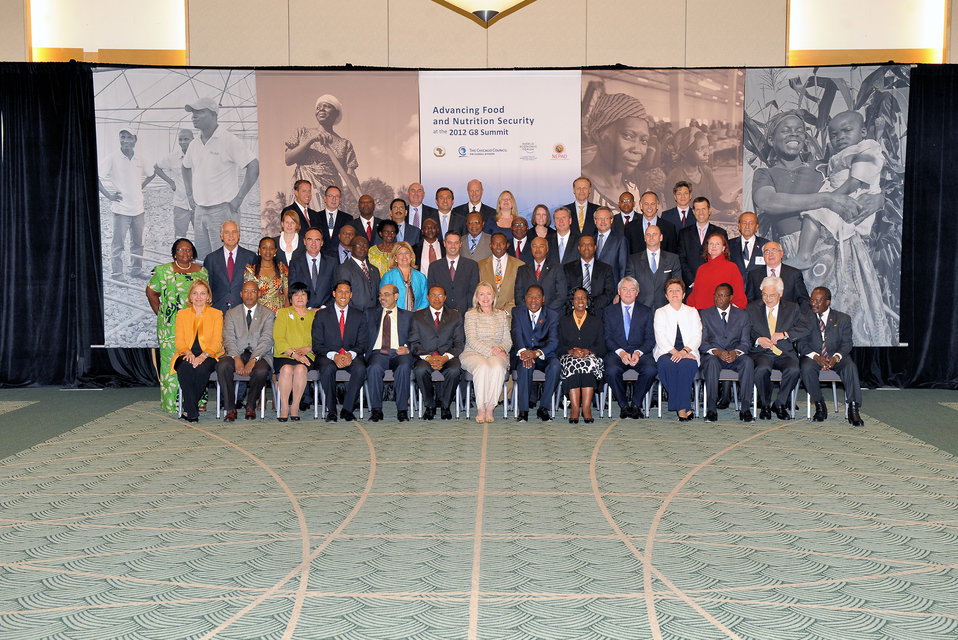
Secretary Clinton Delivers Remarks on Global Food Security

U.S. Secretary of State Hillary Rodham Clinton delivers remarks on Global Food Security at the Ronald Reagan Center in Washington, D.C. on May 18, 2012.